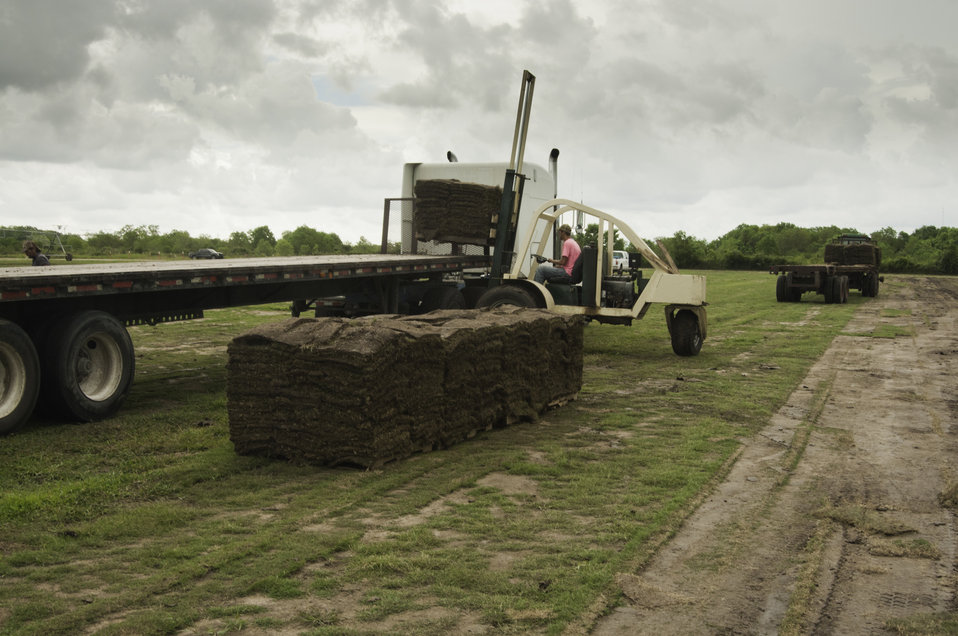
Sod used for landscaping is harvested on the Quality Turf Farms in Guy, TX on Aug. 23, 2013.